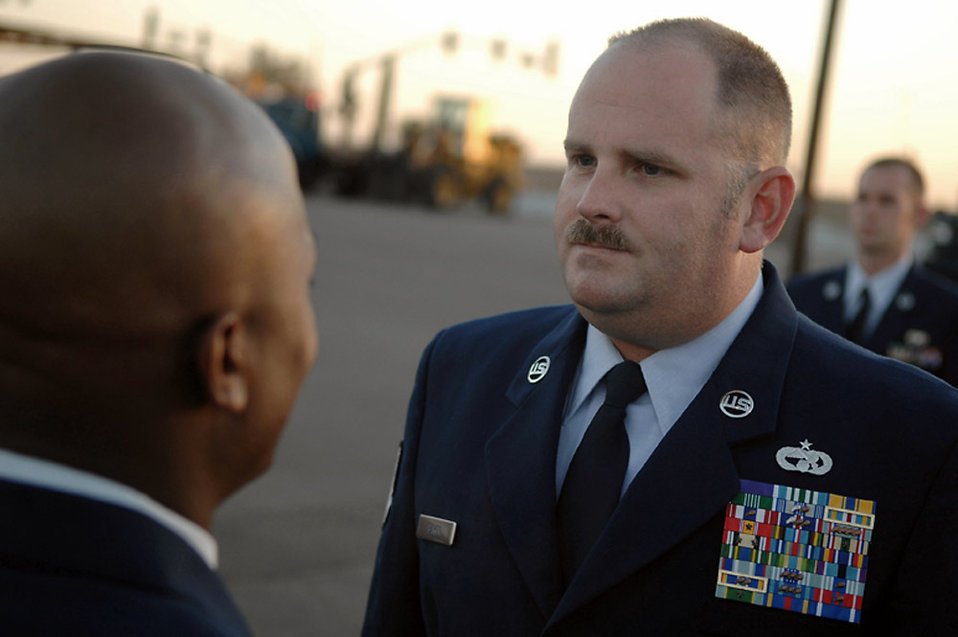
Purple Heart recipient ready to get into the fight after injury

Tech. Sgt. Jerome Baker stands in formation with the rest of his unit during a uniform inspection in October at Luke Air Force Base, Ariz. He is the 56th Logistics Readiness training NCO.